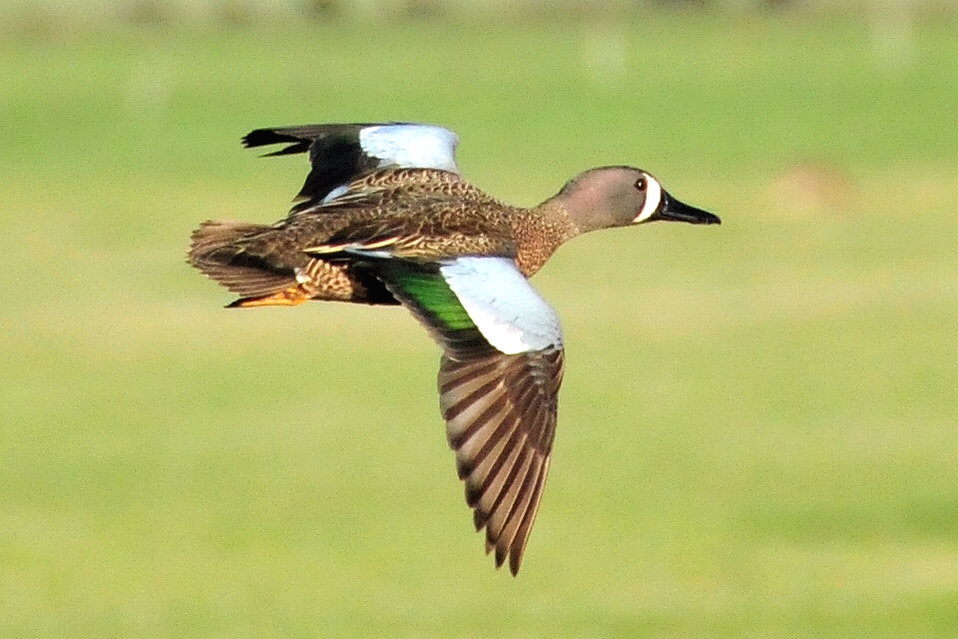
Blue-winged teal in flight Sand Lake National Wildlife Refuge

Blue-winged teal in flight at Sand Lake NWR.